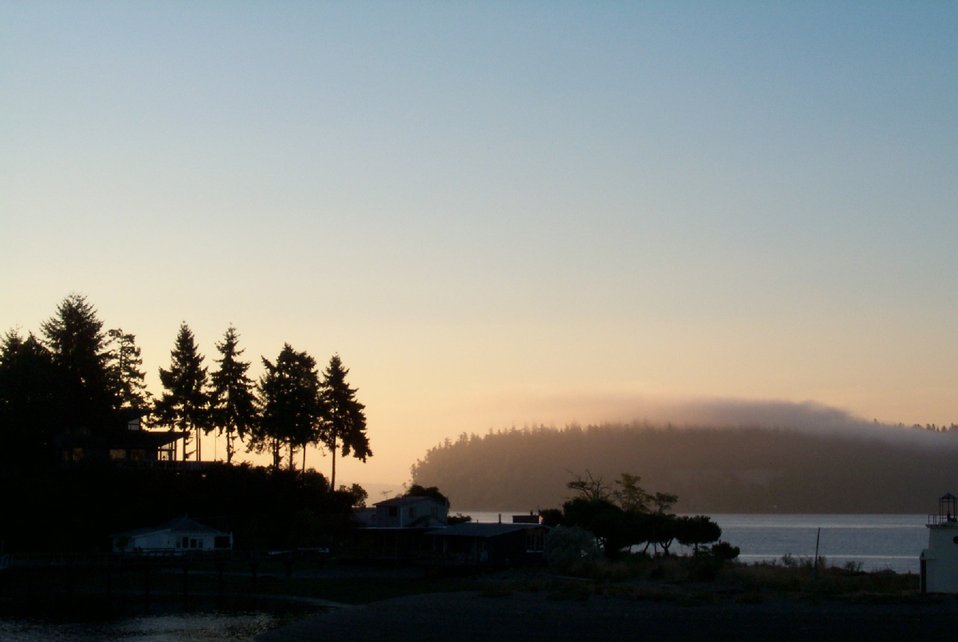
Looking over the spit at Gig Harbor to a fog-enshrouded Point Defiance.